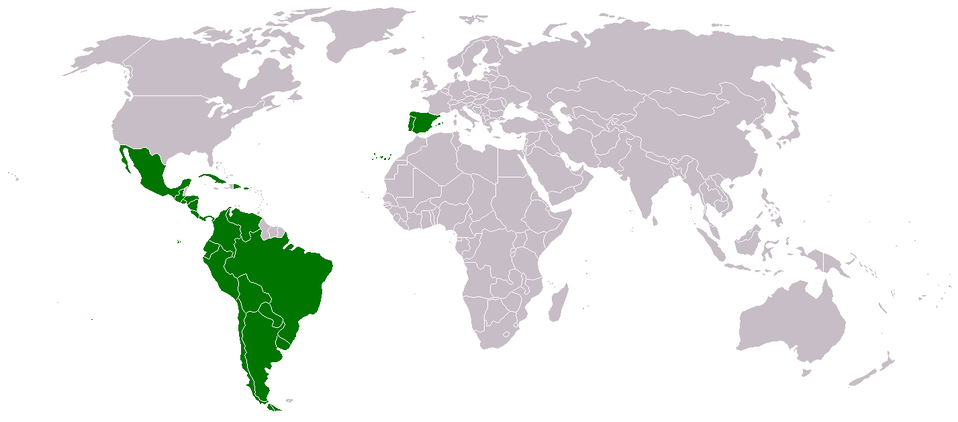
Mapa de Iberoamerica